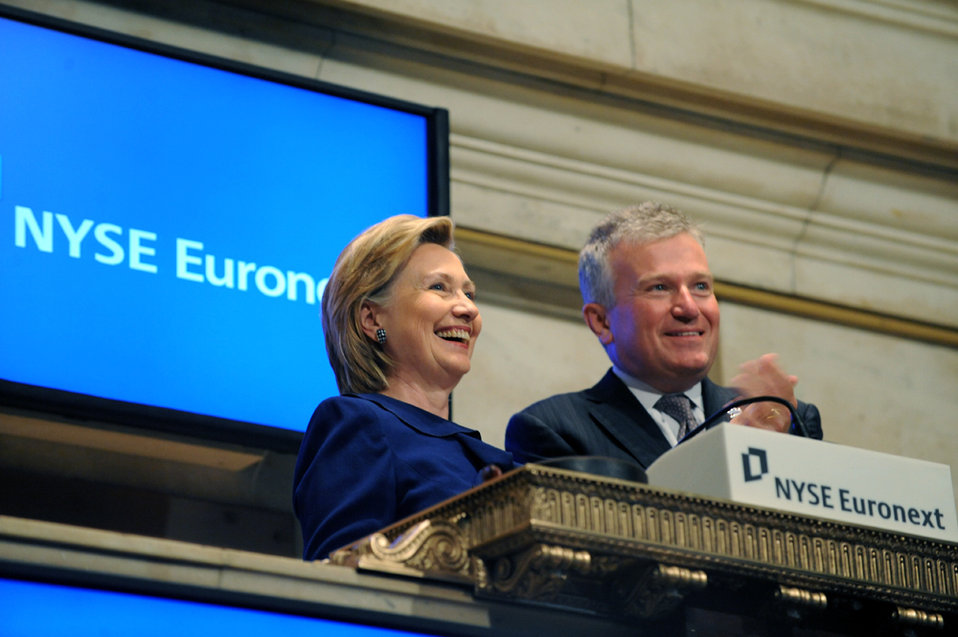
UNGA 2009: Secretary Clinton Meets With New York Stock Exchange CEO

U.S. Secretary of State Hillary Rodham Clinton on the floor of the New York Stock Exchange (NYSE) with NYSE Chief Executive Officer Duncan Niederauer during the 64th Session of the UN General Assembly in New York City, New York September 21, 2009.